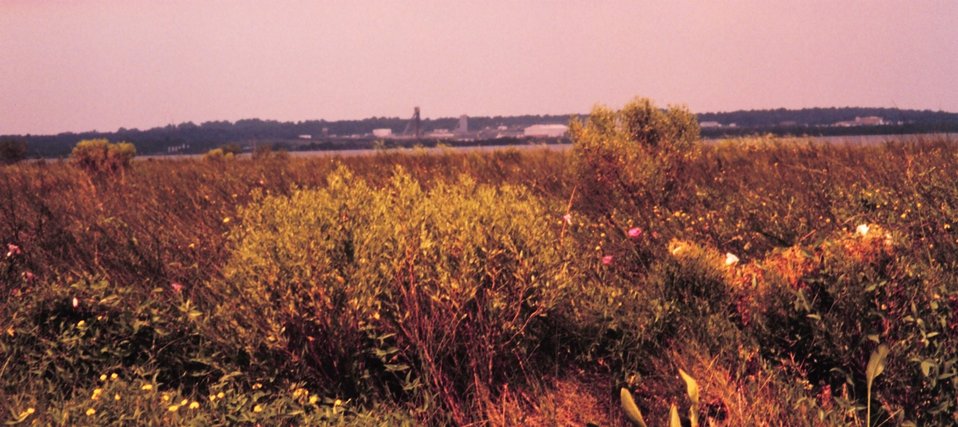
Large pink and white flowers are marsh mallows, a wild relative of hibiscus. Roots were once used to make marshmallows.